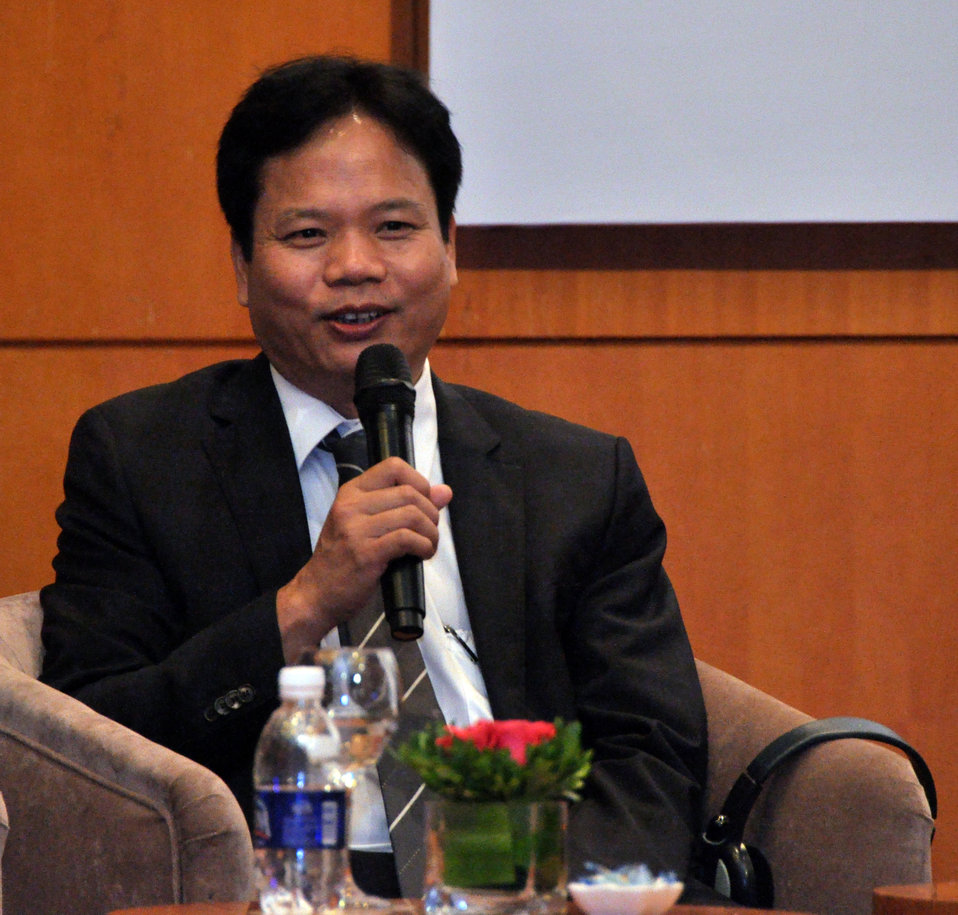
USAID's Support for Trade Acceleration Project (USAID STAR Plus) Closing Ceremony

Hanoi, August 26, 2013.